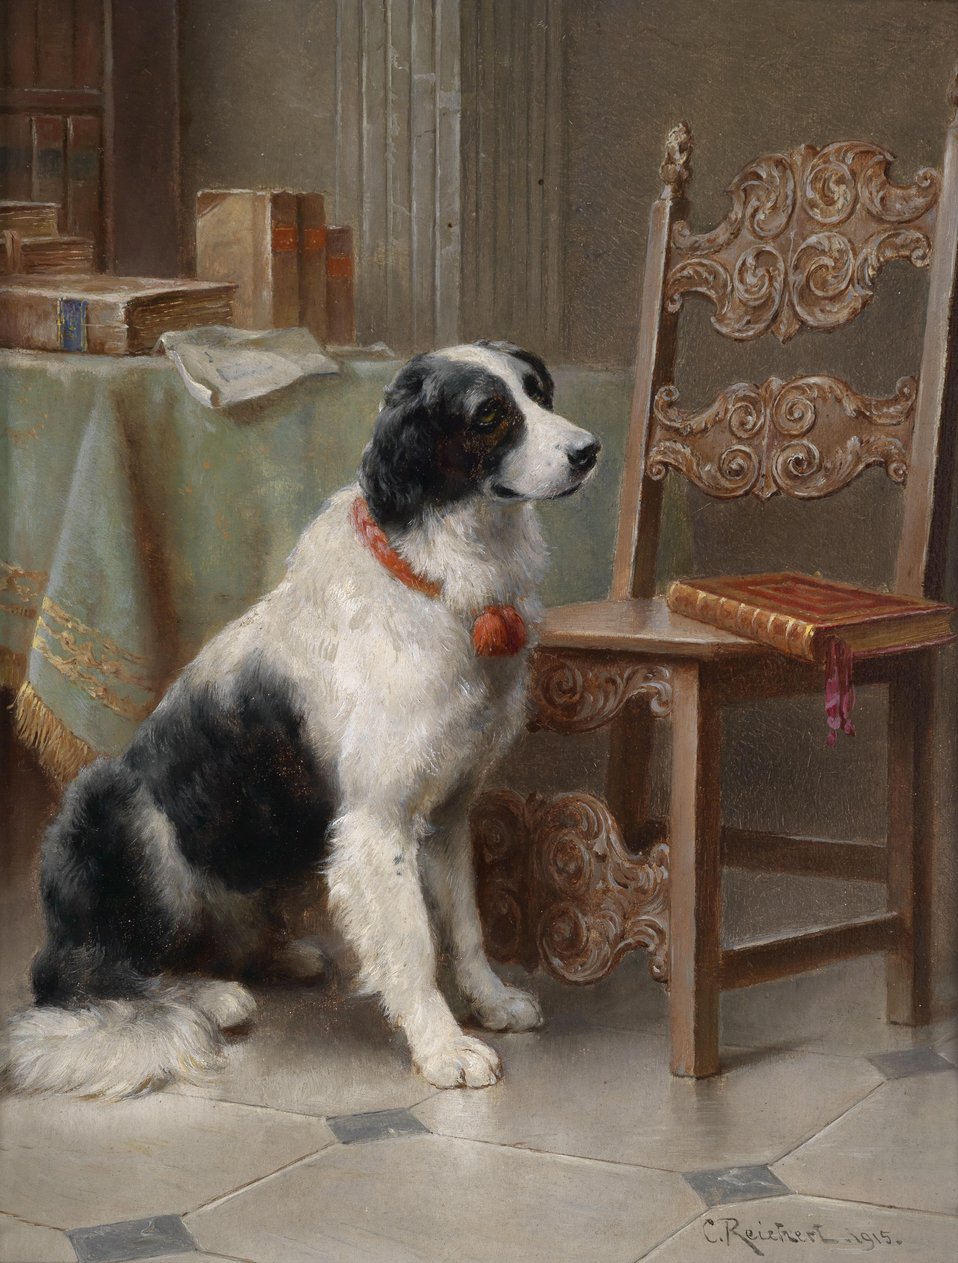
Der Liebling der Familie, signiert, datiert C. Reichert 1915, Öl auf Holz, 27,5 x 21 cm